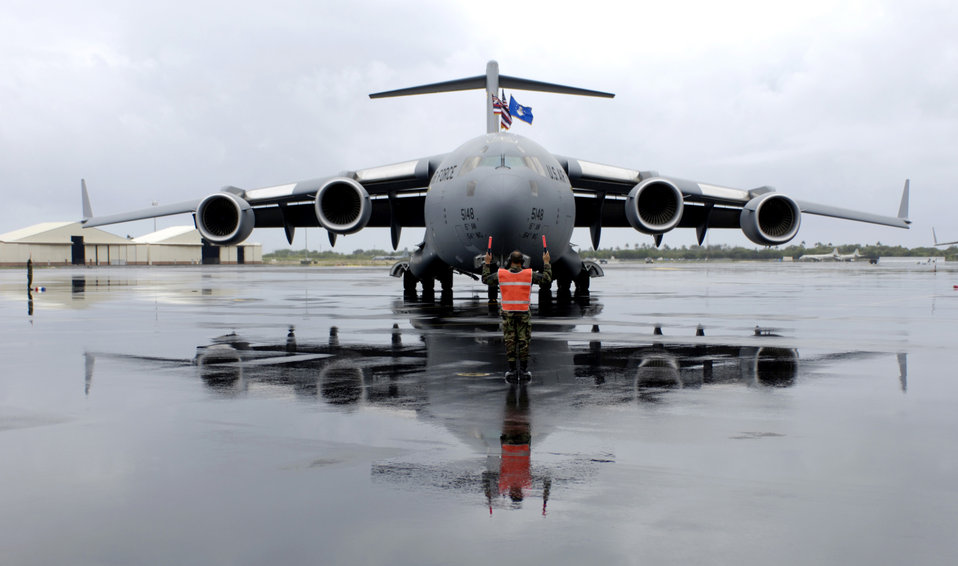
C-17 arrival

Master Sgt. Salvador Baltazar marshals in Hickam's third C-17 Globemaster III at Hickam Air Force Base, Hawaii, Tuesday, March 14, 2006. Hickam will be getting eight C-17s that will enhance military capabilities to rapidly deploy assets throughout the Pacific. Sergeant Baltazar is a Hawaii Air National Guard crew chief from the 154th Maintenance Squadron.